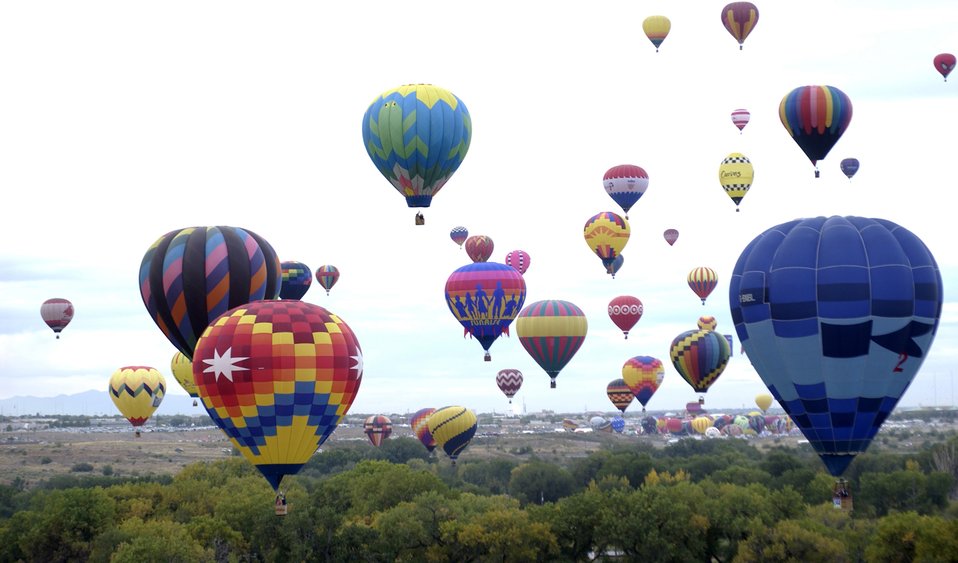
Rising up

Over 700 hot air balloons took off for the first mass ascension over Fiesta Park during the Balloon Fiesta at Albuqerque, New Mexico, Oct. 7, 2006. Balloon Fiesta is a world-renowned New Mexico attraction where several hot air balloons have been flying for thirty five years.